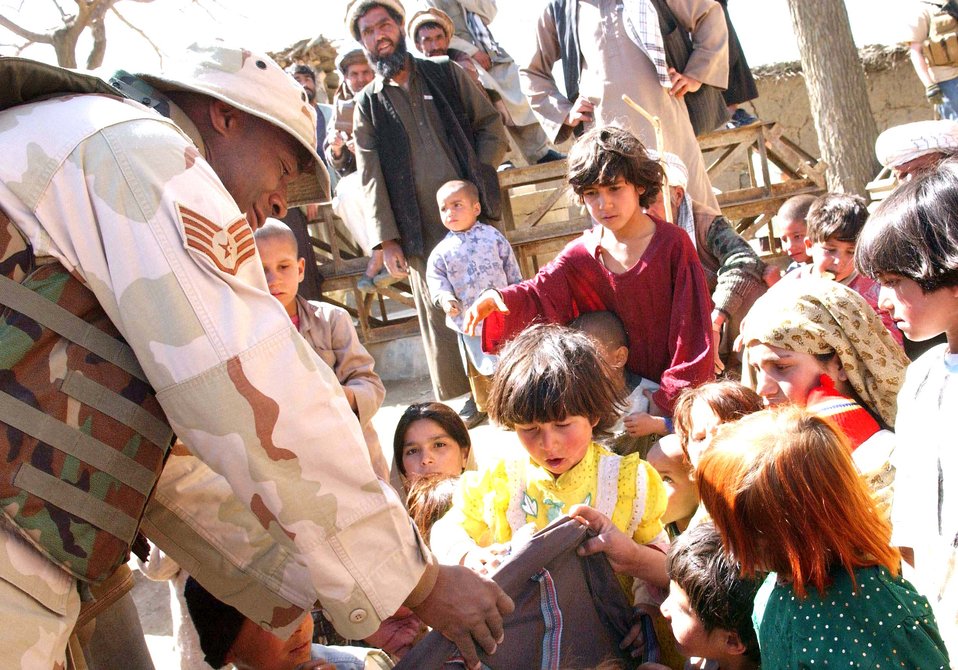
Airmen adopt-a-village or two

JA FARKEL, Afghanistan - Staff Sgt. Larenzo Smartt hands a bag of school supplies to an Afghan girl during an Adopt-A-Village visit here. He is an administrator with the 455th Expeditionary Mission Support Group at nearby Bagram Air Base.